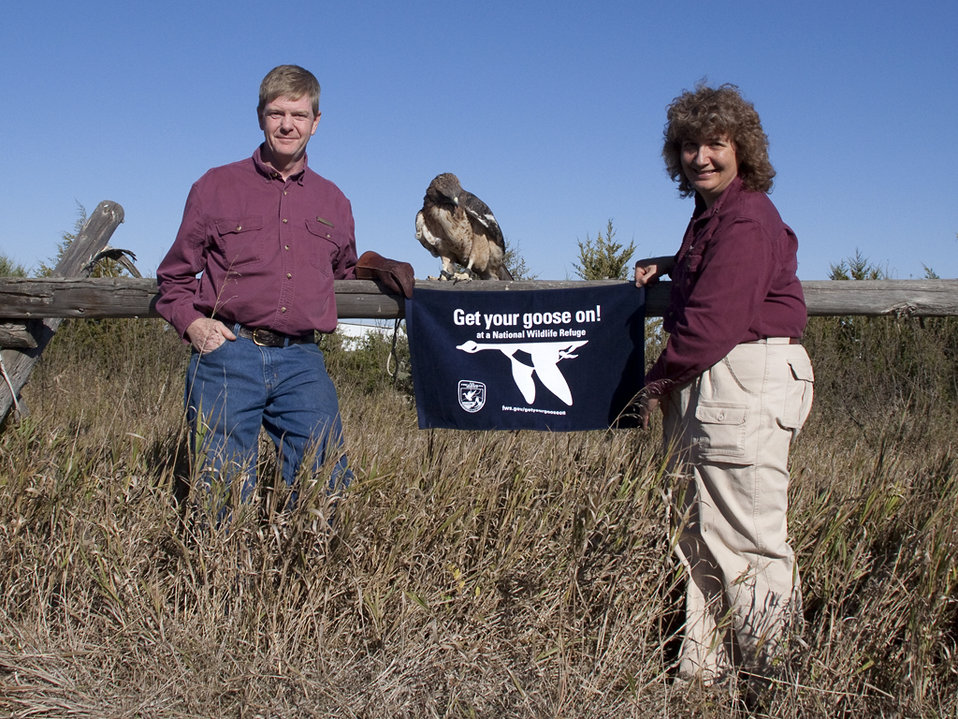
Get Your Goose On! - Raptor Style!

During Huron Wetland Management District's 2012 Prairie Festival, visitors were treated to an up close and personal look at various birds of prey.